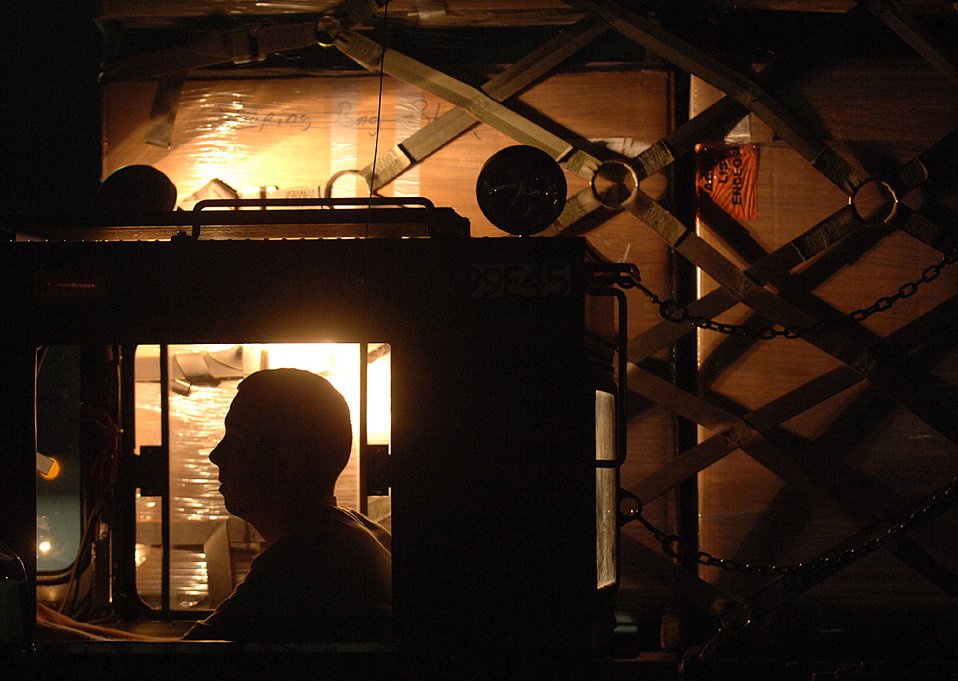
Ramstein members deliver aid to Georgia

Airman 1st Class Robert Swigart waits for a loadmaster to guide him and his 50,000 pounds of cargo into the back of a C-130 Hercules delivering humanitarian assistance to Georgia Aug. 17 at Ramstein Air Base, Germany. Airman Swigart is an aerial transporter assigned to the 723rd Air Mobility Squadron at Ramstein AB.